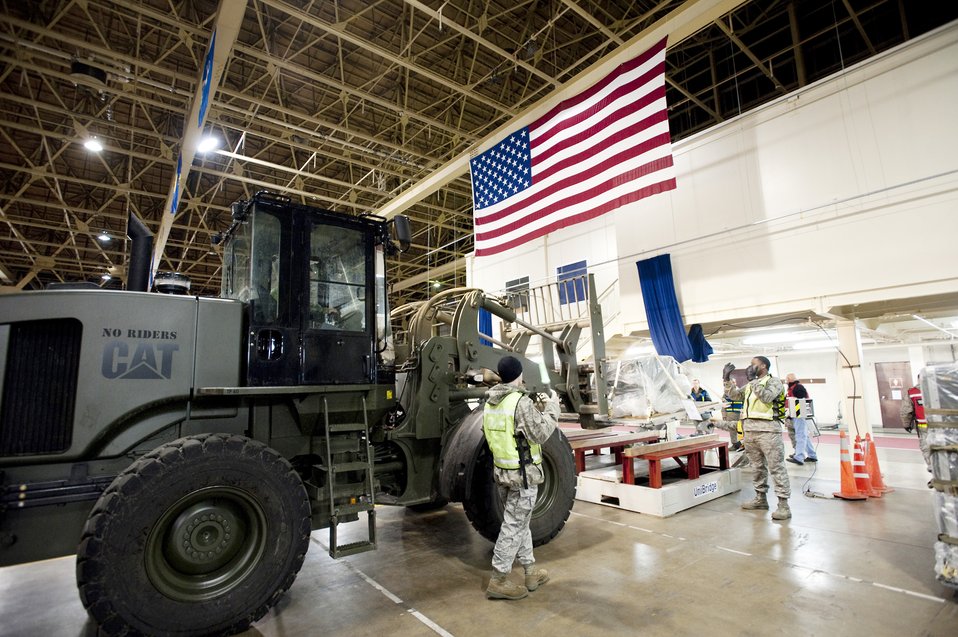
Misawa operations after dark

Airmen of the 35th Logistics Readiness Squadron prepare to set an aircraft pallet on a scale at Misawa Air Base, Japan, Jan. 28, 2010. The Airmen measure the weight and dimensions of each pallet to help loadmasters determine where to place them on an aircraft.